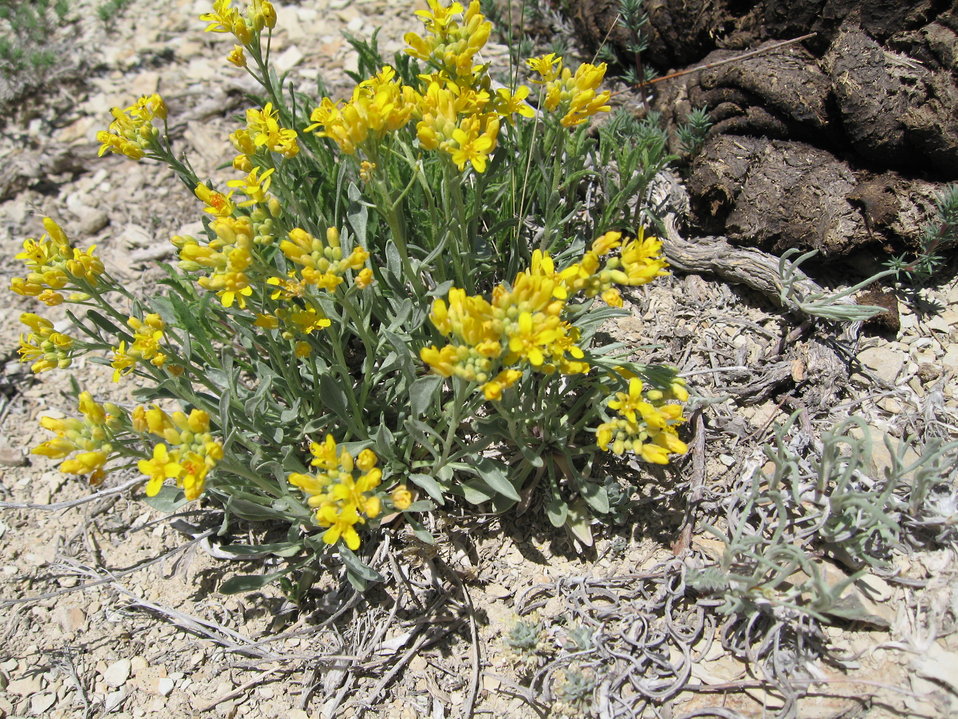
Dudley Bluffs Twinpod

A typical Dudley Bluffs twinpod in full bloom during late-May. The Dudley Bluffs twinpod (Physaria obcordata) are limited or endemic to barren white shale outcrops and specific soil tongues in the Piceance Basin of Rio Blanco County, Colorado.